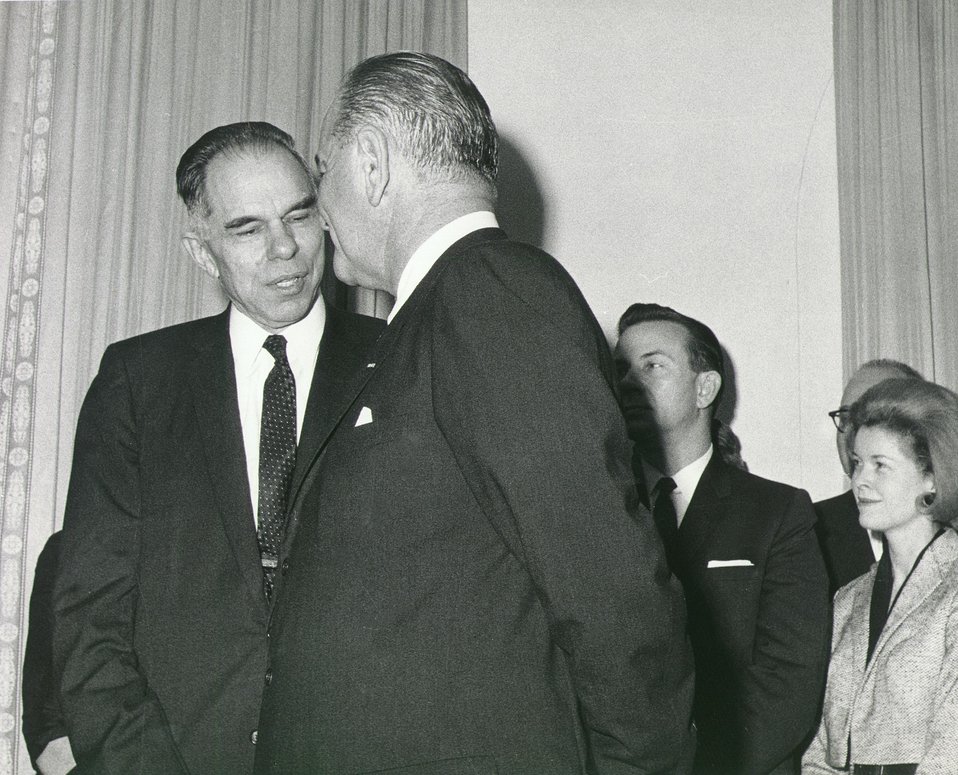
Fermi Award for Rickover in 1964.